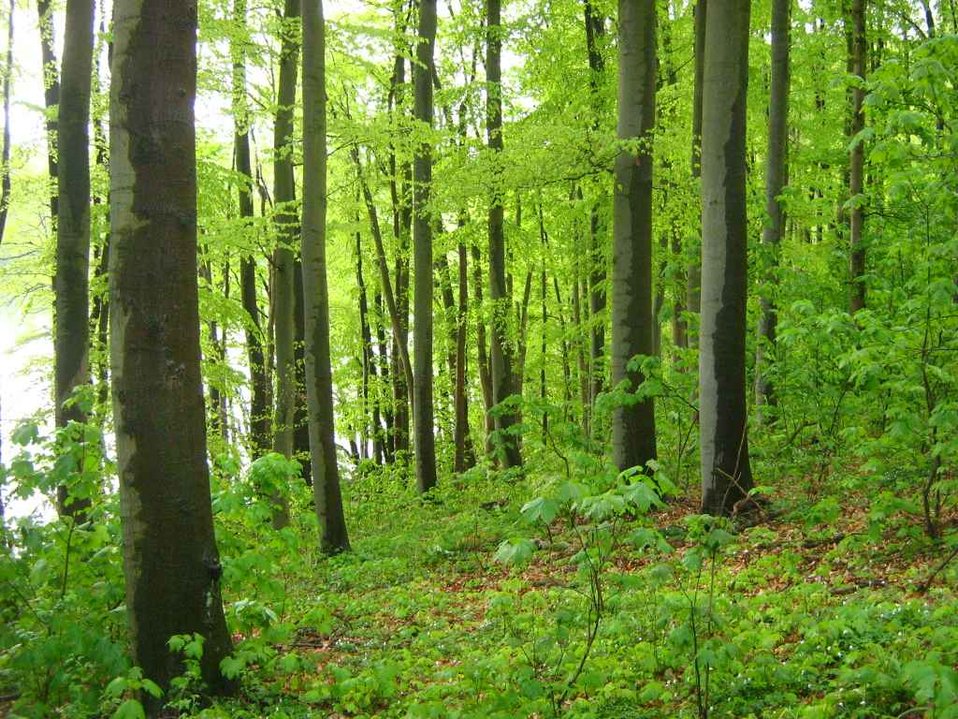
Deutsch: Raben Steinfelder Forst am Pinnower See im Landkreis Parchim (Mecklenburg).